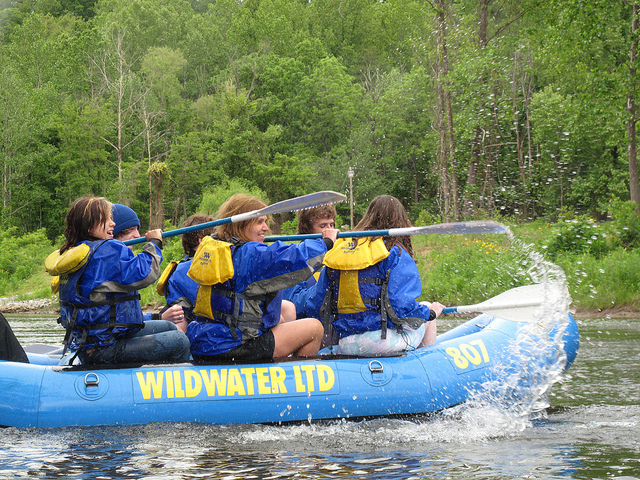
splash fight